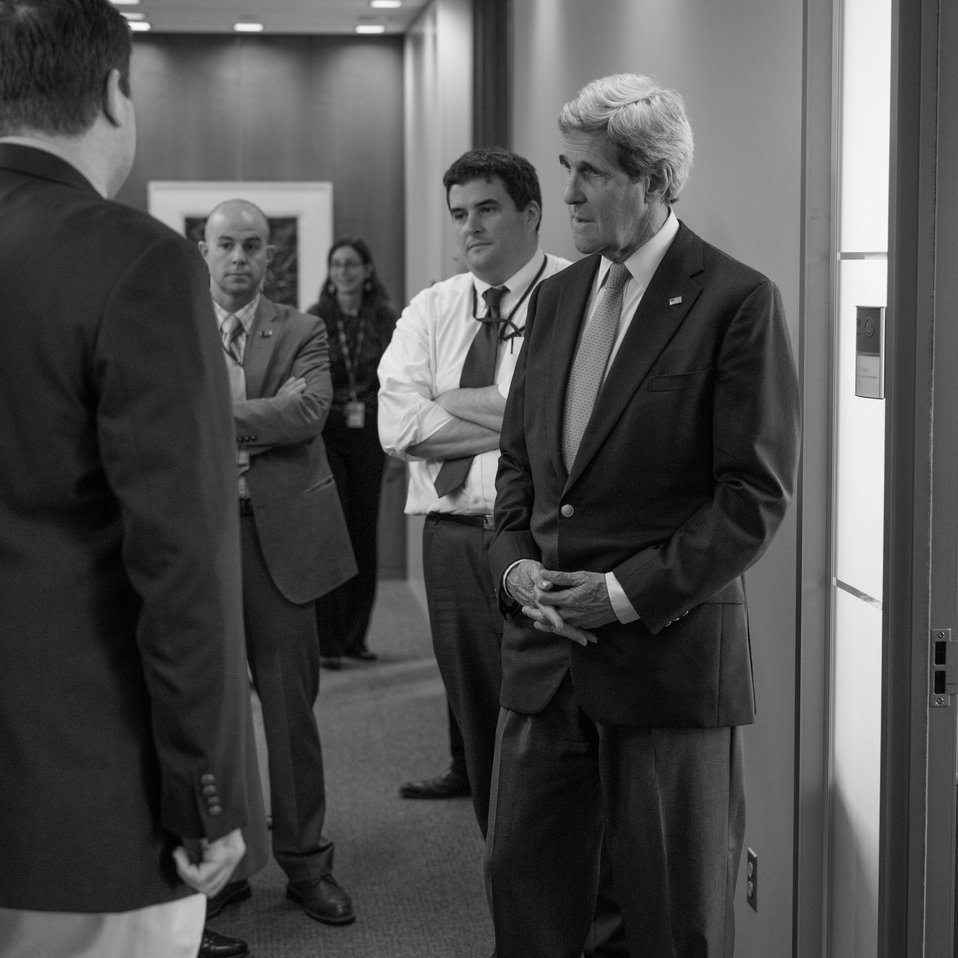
Secretary Kerry Meets With IIP Coordinator Phillips and His Staff

With U.S. Coordinator for the Bureau of International Information Programs Macon Phillips looking on, U.S. Secretary of State John Kerry visits the Bureau of International Information Programs offices at the U.S. Department of State in Washington, D.C., on May 9, 2014.